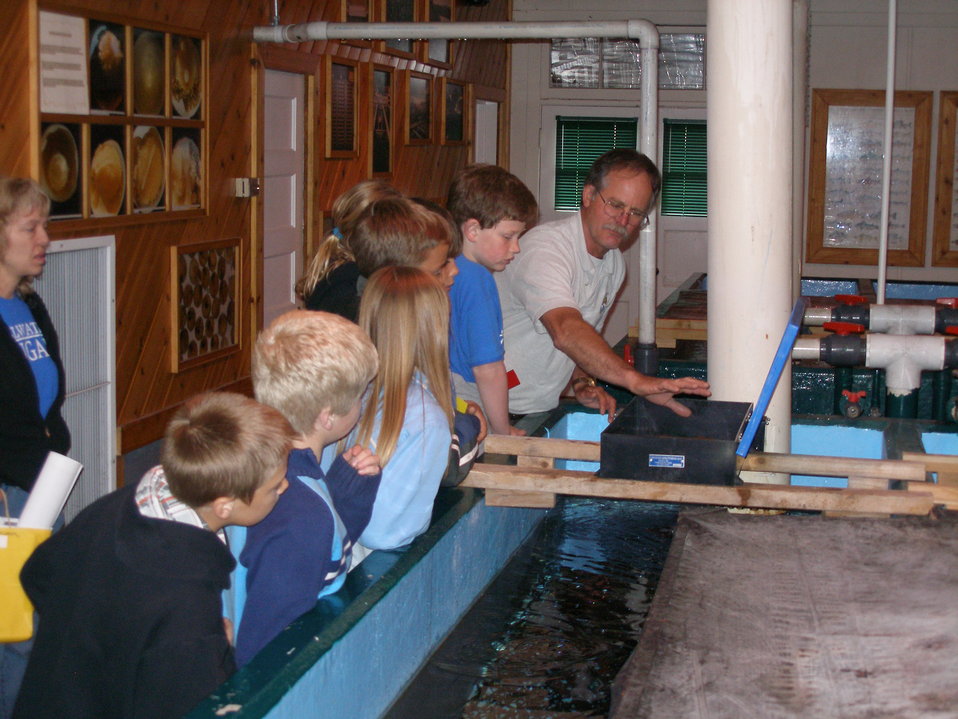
School Children on Tour

Mark Maskill, Hatchery project leader at Creston National Fish Hatchery in Montana, gives a tour of the hatchery to local school children.